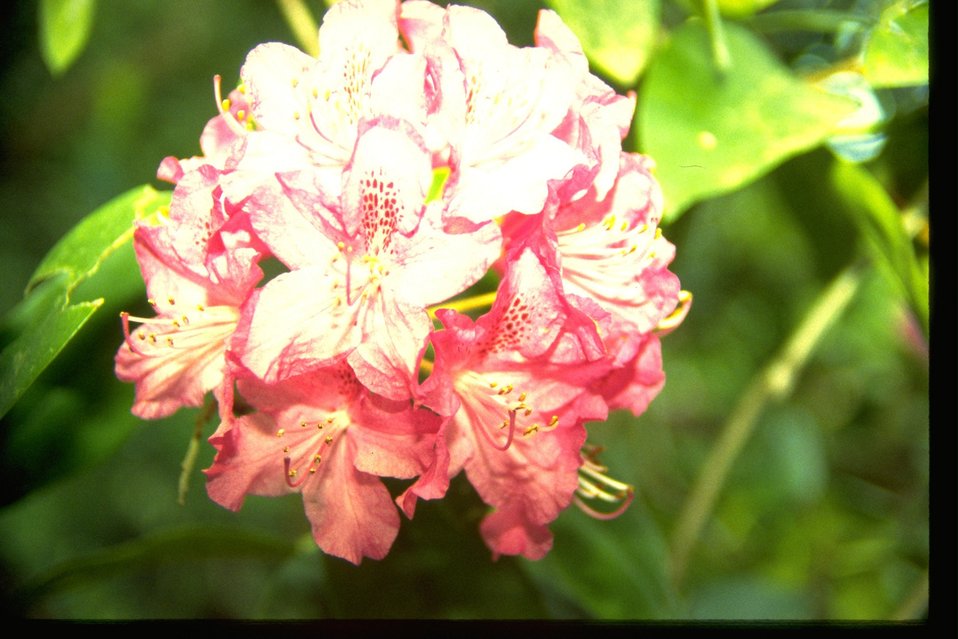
Rhododendron at Spruce Reach Island.